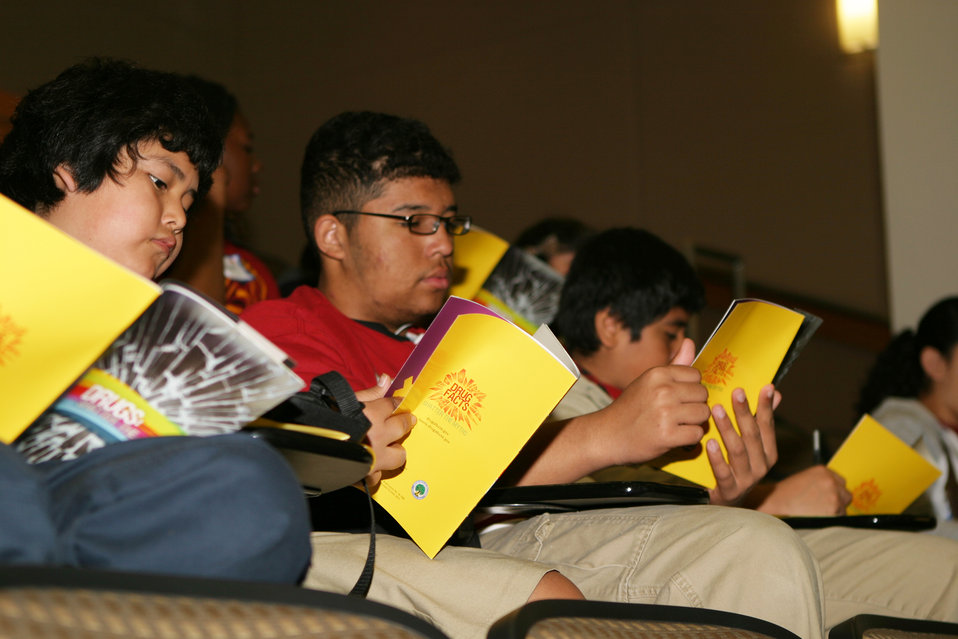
Kids Day 2011 - Substance Abuse

Kids Day at the USC School of Pharmacy. Around 120 kids from El Sereno Middle School participated this event.